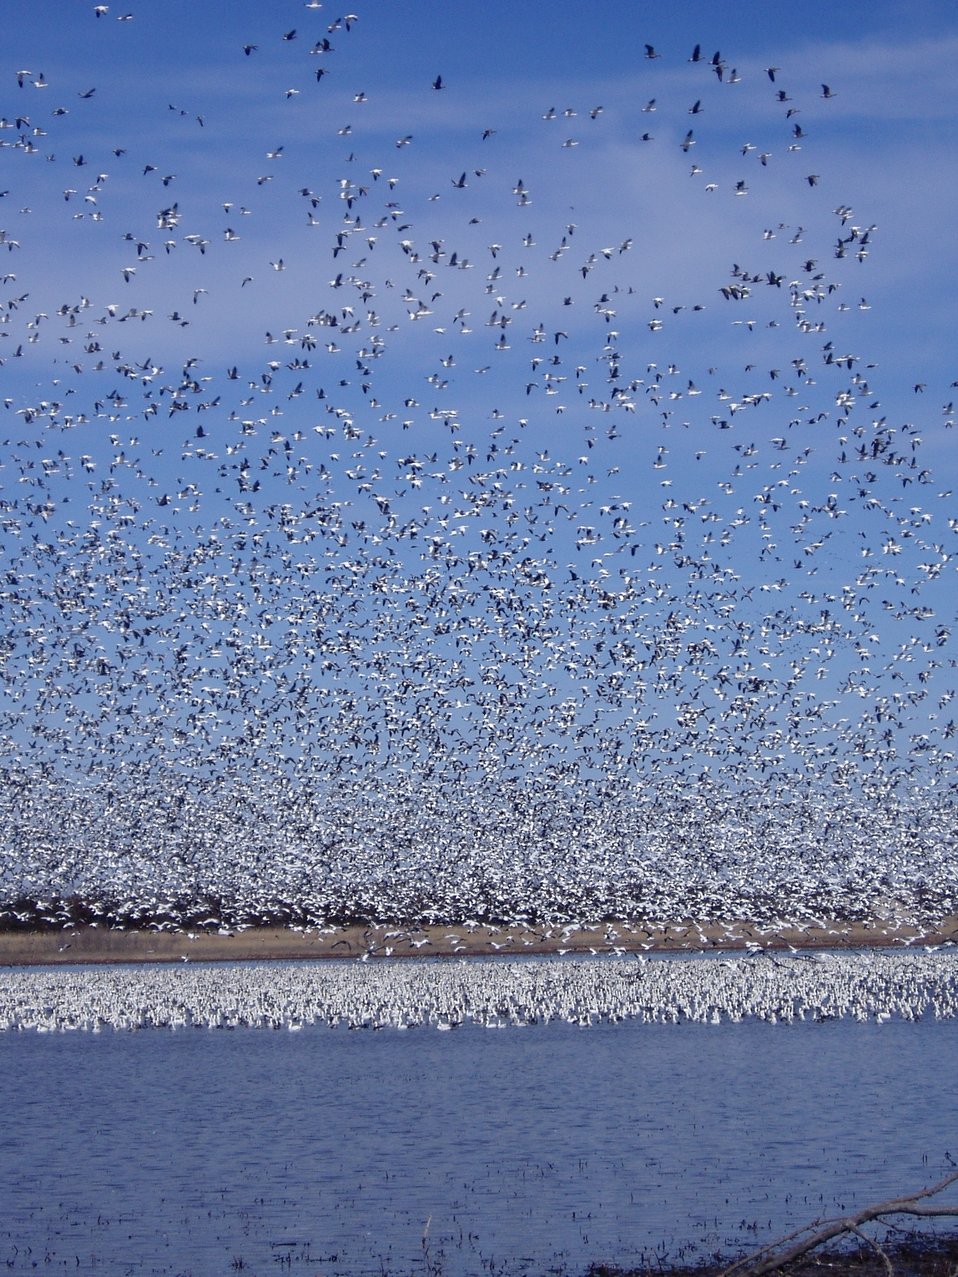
Flock of Birds

Birds in flight at the McMurtrey water production area at the Rainwater Basin National Wildlife Refuge in Nebraska.